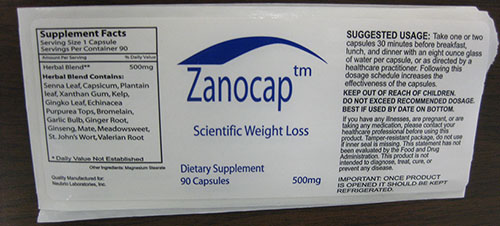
RECALLED - Zanocap Capsules

December 13, 2013 – Product Recall – Stone Independent Research, Inc. Issues Allergy Alert on Undeclared Milk in One Lot of Zanocap Capsules.